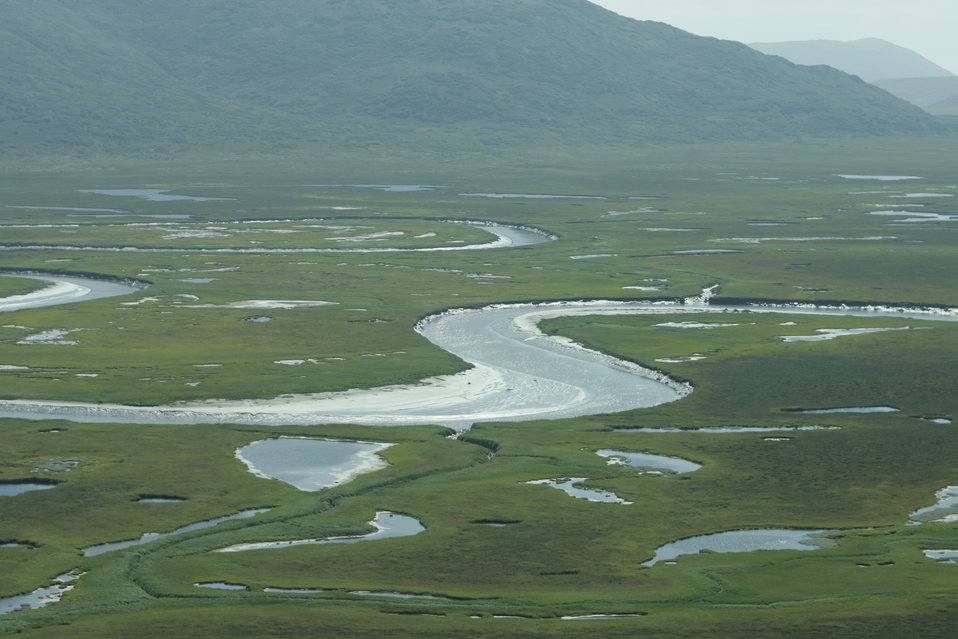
Togiak Nation Wildlife Refuge